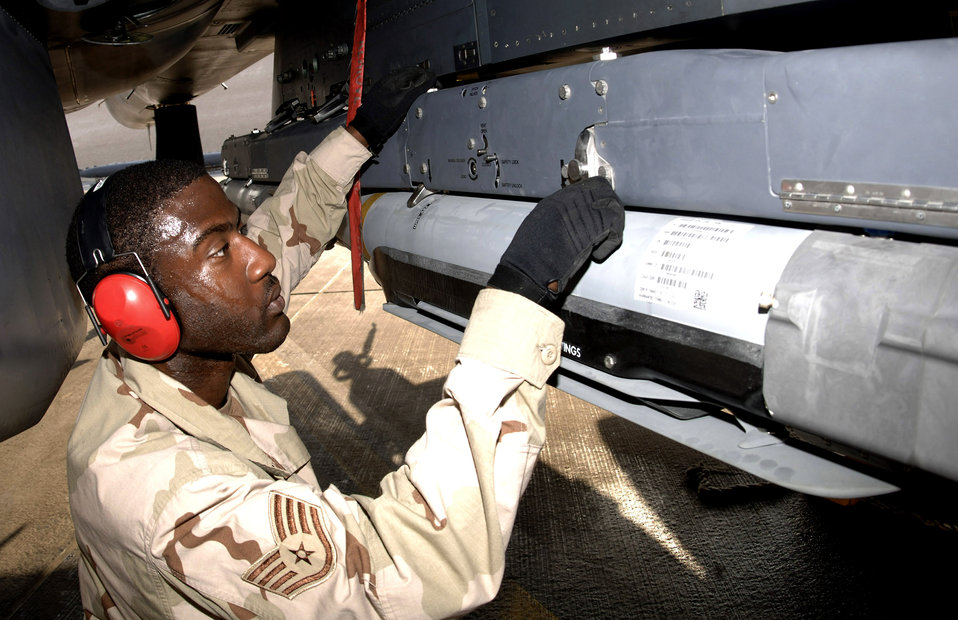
Weapon secured

Staff Sgt. Kevin Harvey of the 379th Expeditionary Aircraft Maintenance Squadron secures GBU-39/B small diameter bombs to an F-15E Strike Eagle in the Southwest Asia area of operations. The bombs? smaller warheads allow U.S. commanders to destroy targets close to friendly troops, civilians, structures and personal property. They represent one way in which airpower technology is helping the United States fight insurgencies, according to Maj. Gen. Charles J. Dunlap Jr., author of a new Air University monograph on counterinsurgency doctrine.